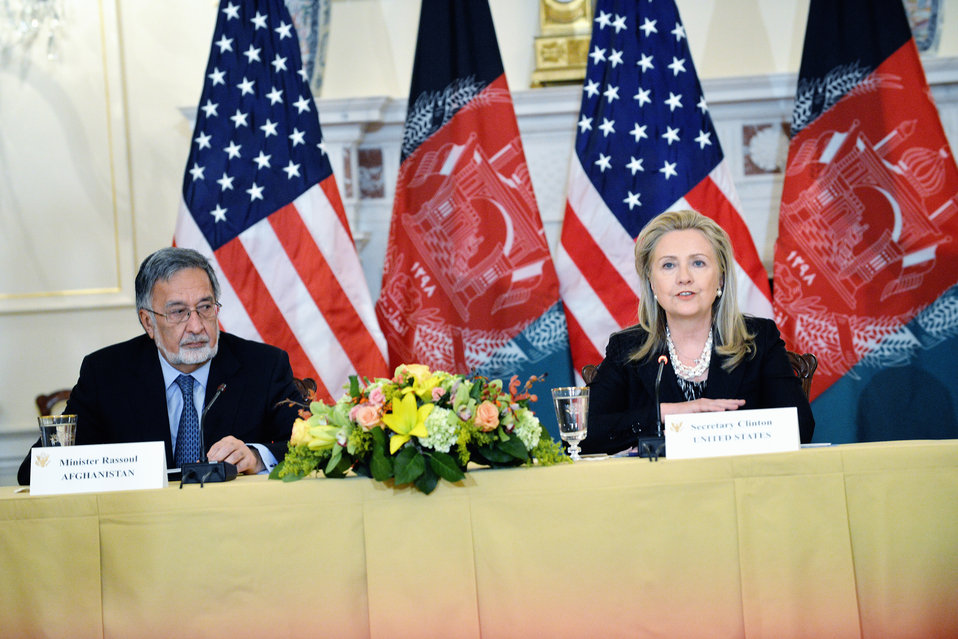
Secretary Clinton Hosts the U.S.-Afghanistan Bilateral Commission

U.S. Secretary of State Hillary Rodham Clinton hosts the U.S.-Afghanistan Bilateral Commission with Afghan Foreign Minister Zalmai Rassoul at the U.S. Department of State in Washington, D.C., October 3, 2012.